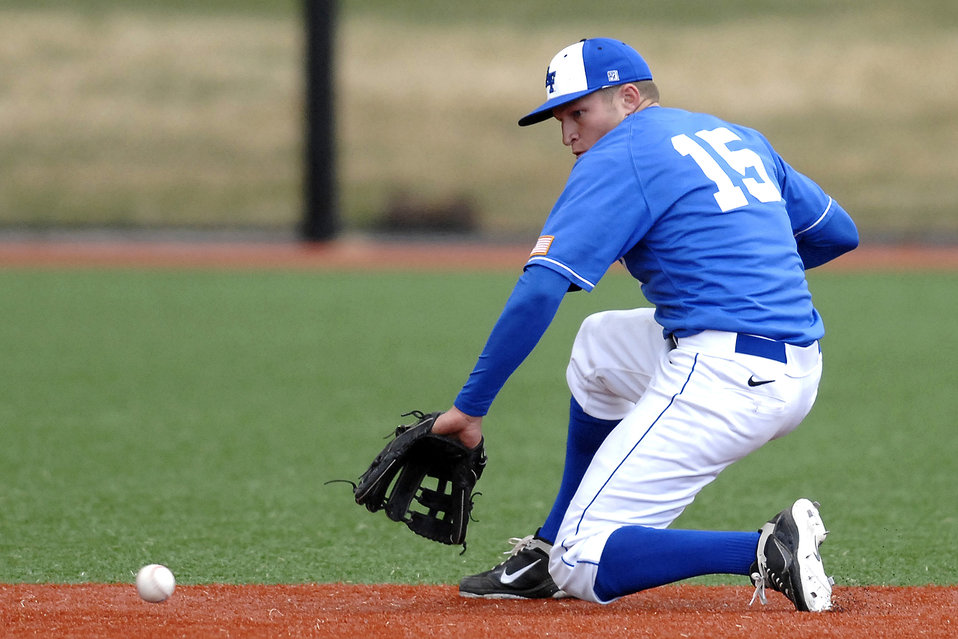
Falcons vs. Bears

Air Force Academy Falcons senior shortstop Vai Schierholtz scoops up a hard grounder during action against the Northern Colorado Bears April 19, 2011, at Falcon Field in Colorado Springs, Colo. The Bears took the lead in the top of the ninth when first baseman Jarod Berggren blasted one over the right-field fence with 2 outs and a full count to lift Northern Colorado over the Falcons 6-5.